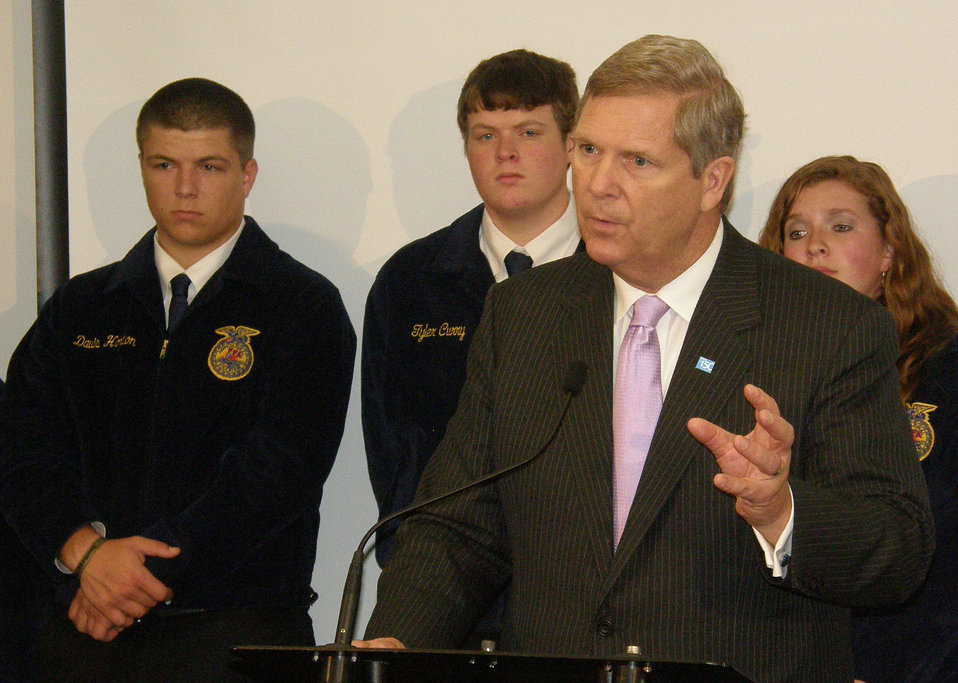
Agriculture Secretary Tom Vilsack spoke to Kemin Industries employees and FFA students from central Iowa in Des Moines, IA on Friday, April 20, 2012. Kemin Industries is an innovative bioscience company that is using plant-based materials to manufacture ingredients used in dietary supplements and in personal care products.